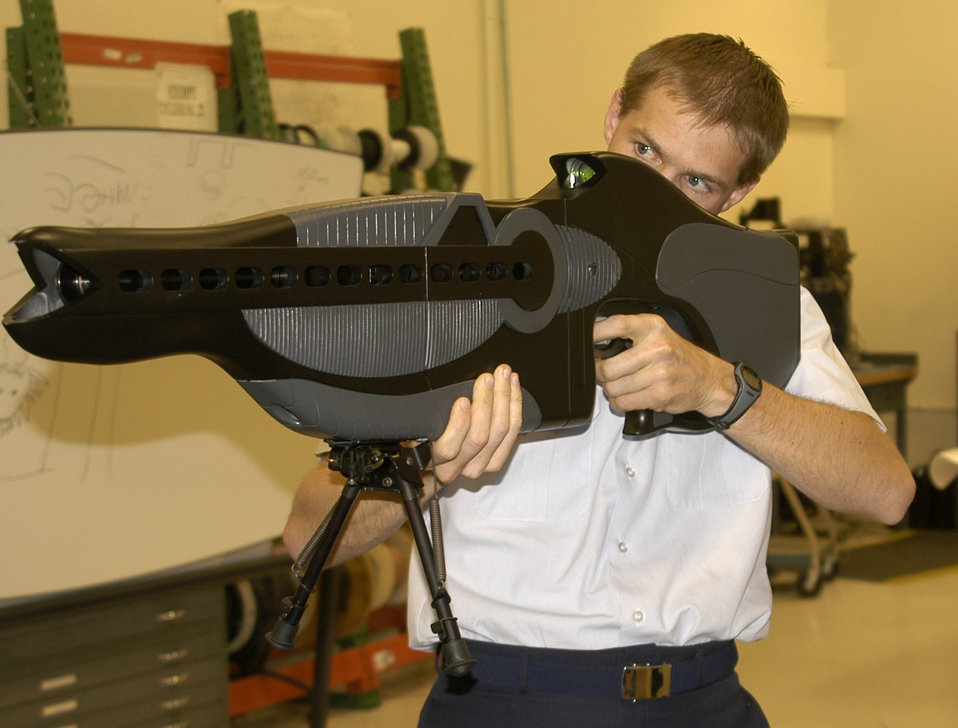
PHaSR gun

KIRTLAND AIR FORCE BASE, N.M. (AFPN) -- Capt. Drew Goettler demonstrates the Personnel Halting and Stimulation Response, or PHaSR, a non-lethal illumination technology developed by the laboratory's ScorpWorks team. The technology is the first man-portable, non-lethal deterrent weapon intended for protecting troops and controlling hostile crowds. The laser light used in the weapon temporarily impairs aggressors by illuminating or